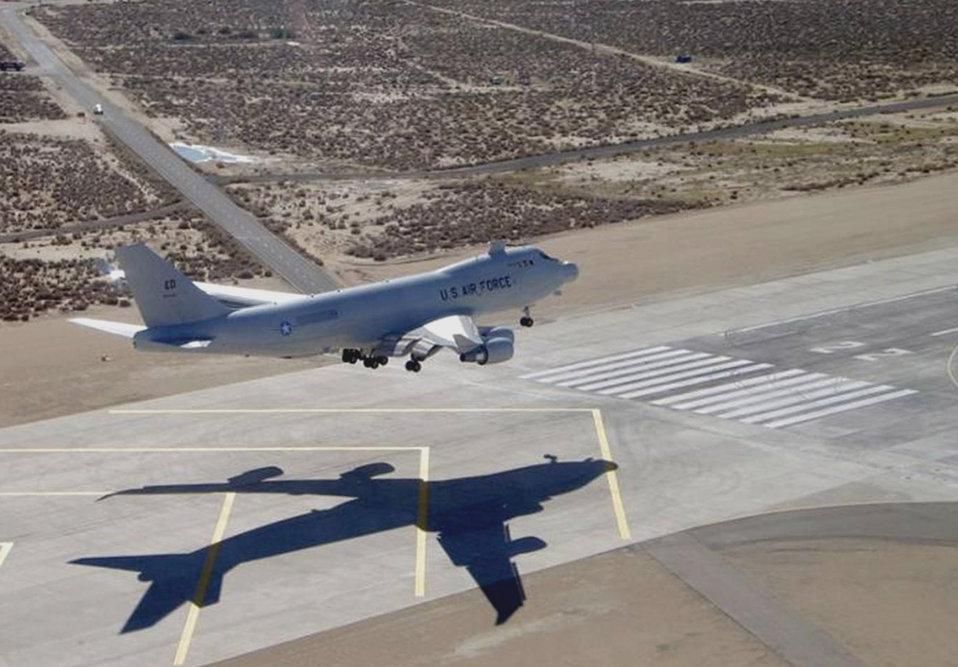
Airborne Laser returns for more testing

YAL-1A, a modified Boeing 747-400F known as the Airborne Laser, lands on Runway 22 Jan. 19, 2007, at Edwards Air Force Base, Calif. It's undergoing a long-term test phase that includes the test firing of the aircraft's low-power lasers in flight for the first time.